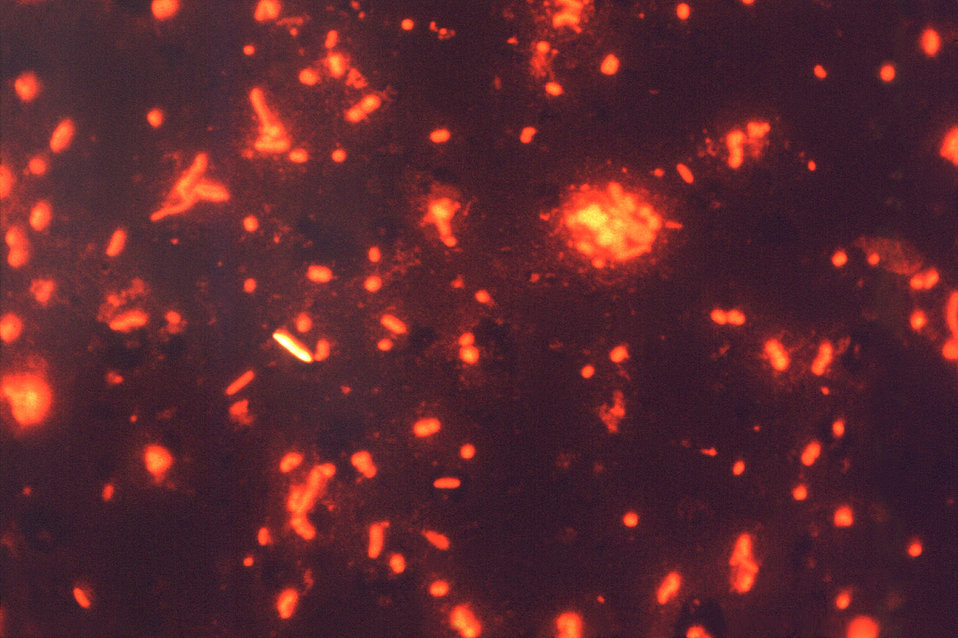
Magnified 1000X, this fluorescent acid-fast stained (Smithwick) photomicrograh revealed the presence of Mycobacterium tuberculosis bacteria in a sputum smear.